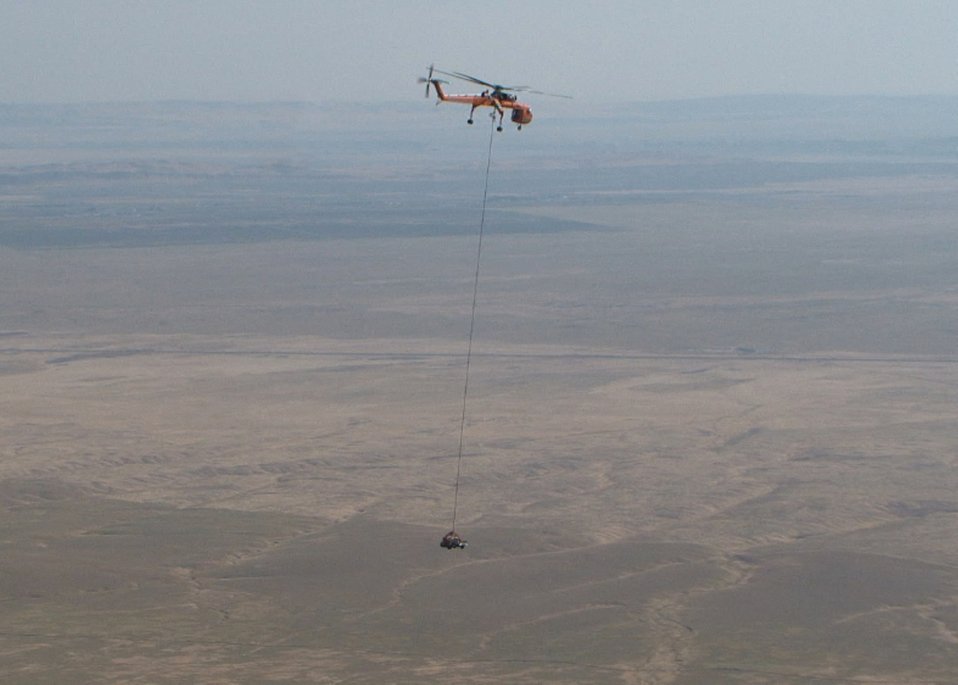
Stimulus funds cleanup of historical mountaintop at Hanford

The U.S. Department of Energy (DOE) is using funding from the American Recovery and Reinvestment Act (Recovery Act) to clean up the Fitzner/Eberhardt Arid Lands Ecology (ALE) Reserve at the Hanford Site in southeast Washington State.